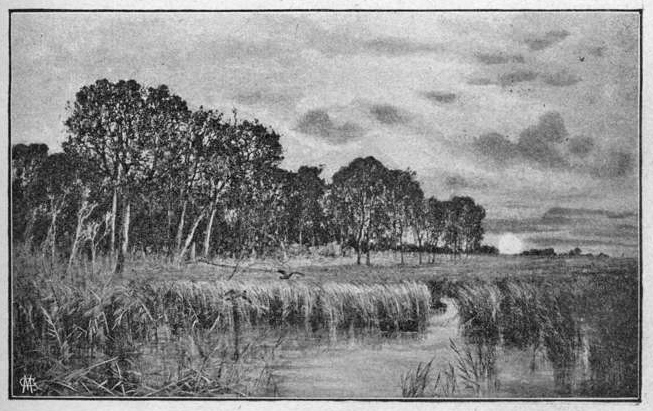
Mondaufgang